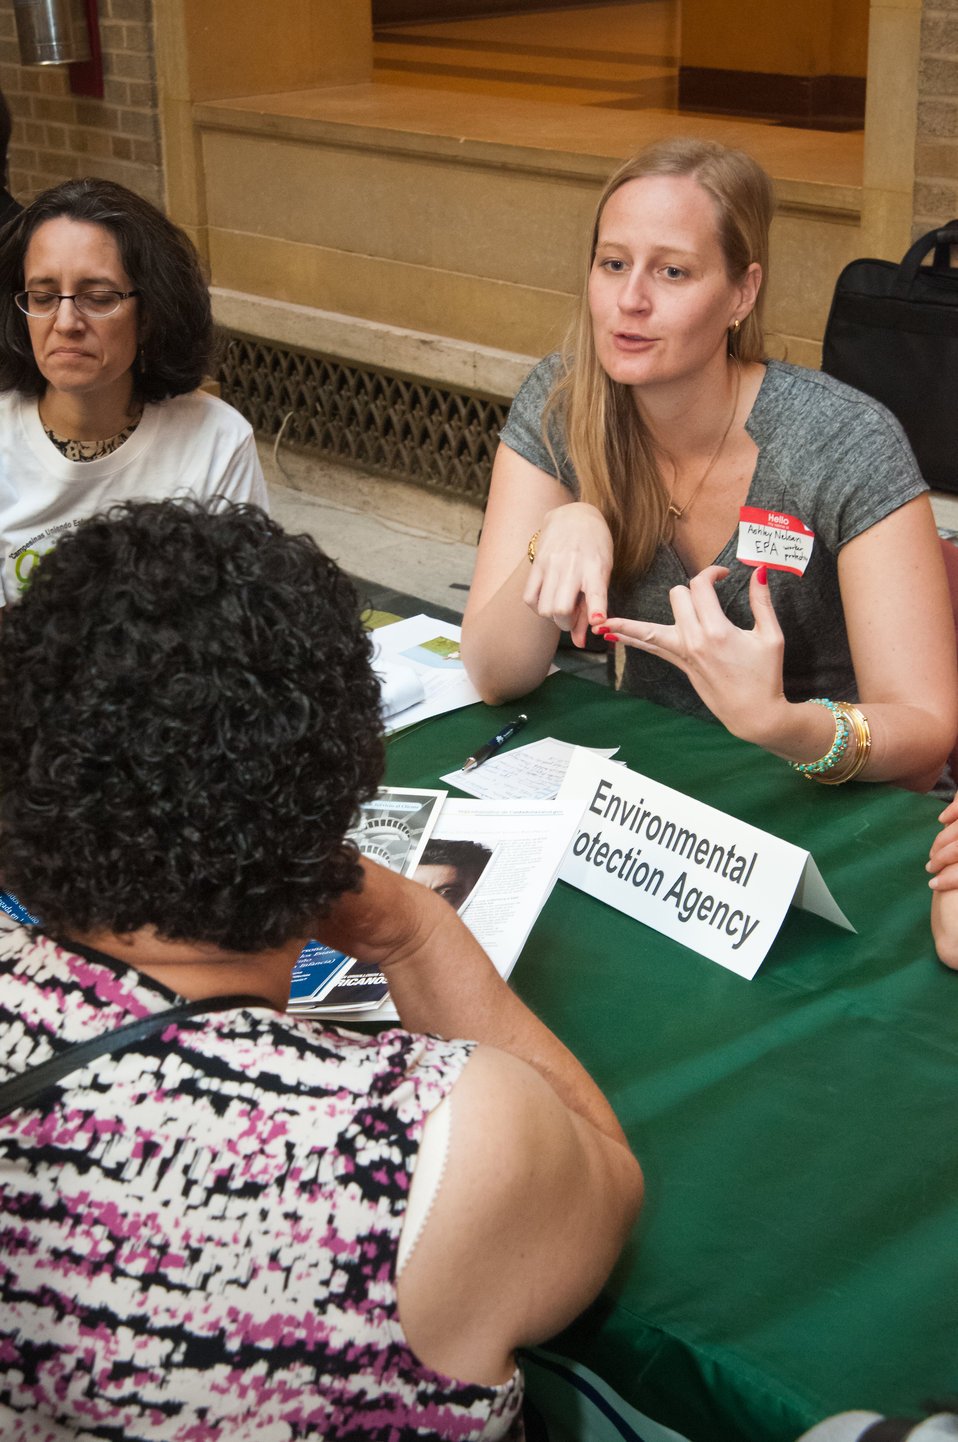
Ashley Nelson, Environmental Protection Agency assists members of Alianza Nacional de Campesinas, an organization of Hispanic Farmworker women at the United States Department of Agriculture, Office of Advocacy and Outreach Breakfast Networking Reception in Washington, DC, on Tuesday, April 9, 2013. The reception allowed the women to network and discuss their issues, priorities and opportunities in rural communities throughout the United States. The women were able to speak to representatives from nine Federal agencies with migrant programs: White House, United States Department of Agriculture (USDA), Department of Health and Human Services (HHS), Housing and Urban Development (HUD), Department of Labor (DOL), Equal Employment Opportunity Commission (EEOC), Department of Education (DOE), Environmental Protection Agency (EPA) and United States Citizenship and Immigration Services.